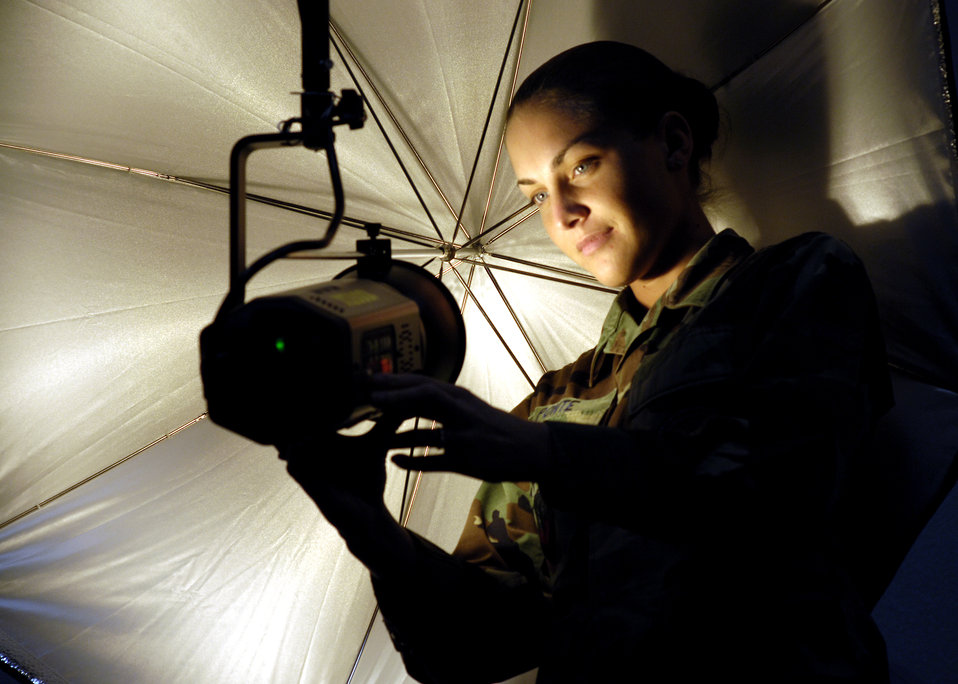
Setting up

DAVIS-MONTHAN AIR FORCE BASE, Ariz. (AFPN) -- Airman 1st Class Christina Ponte calibrates a light at the base photo lab studio. The lab installed a new lighting grid and lights to update the studio, which increases the quality of official portraits. Airman Ponte is a still photographer with the 355th Communications Squadron.